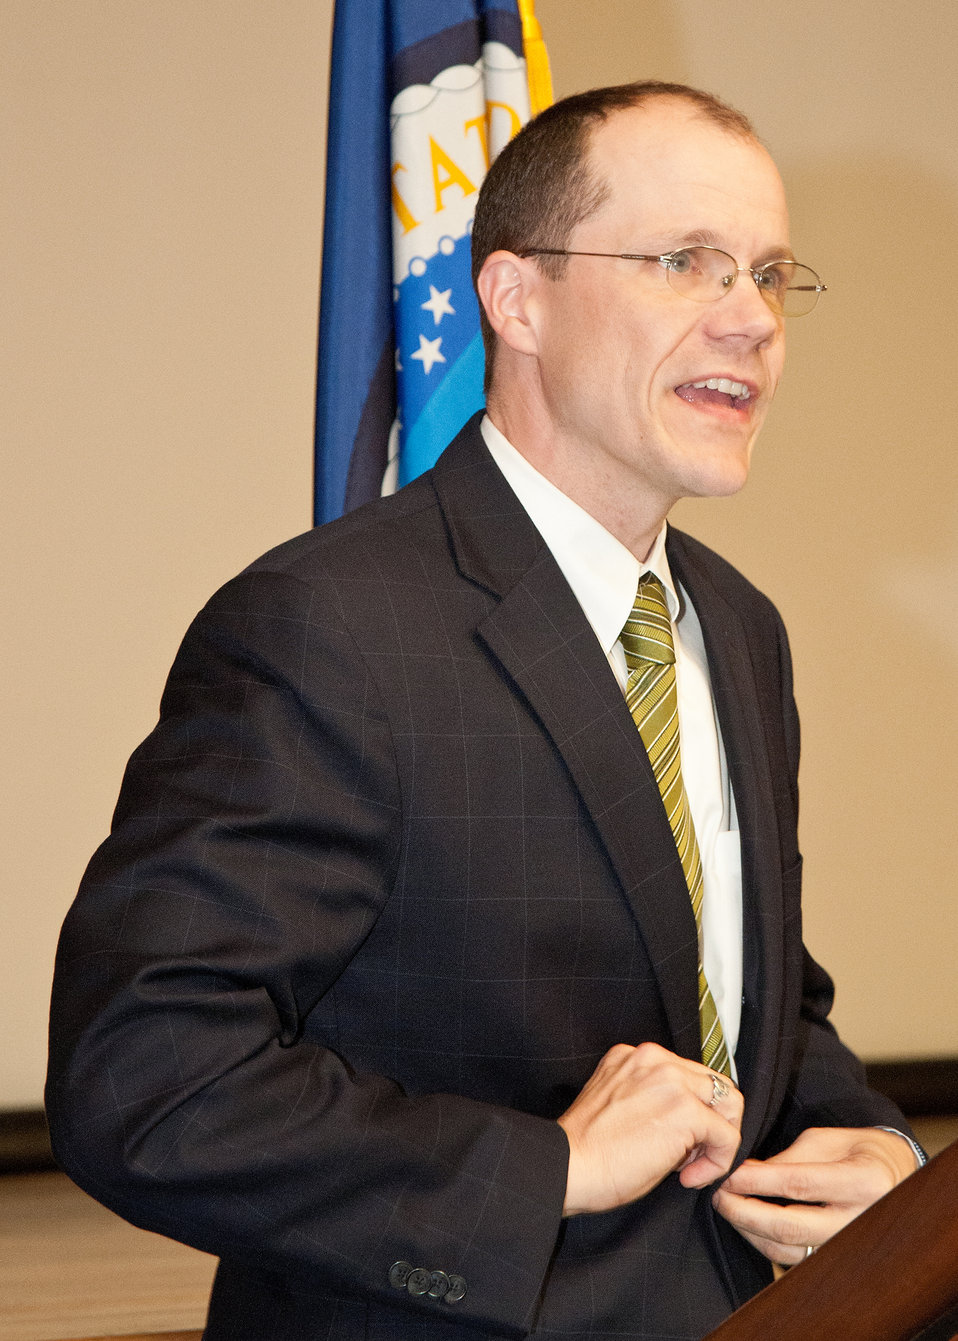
Doug O’Brien, Administrator, Rural Development welcomes employees to the Rural Development Celebration of Service held at the United States Department of Agriculture in Washington, DC, on Wednesday, November 16, 2011.